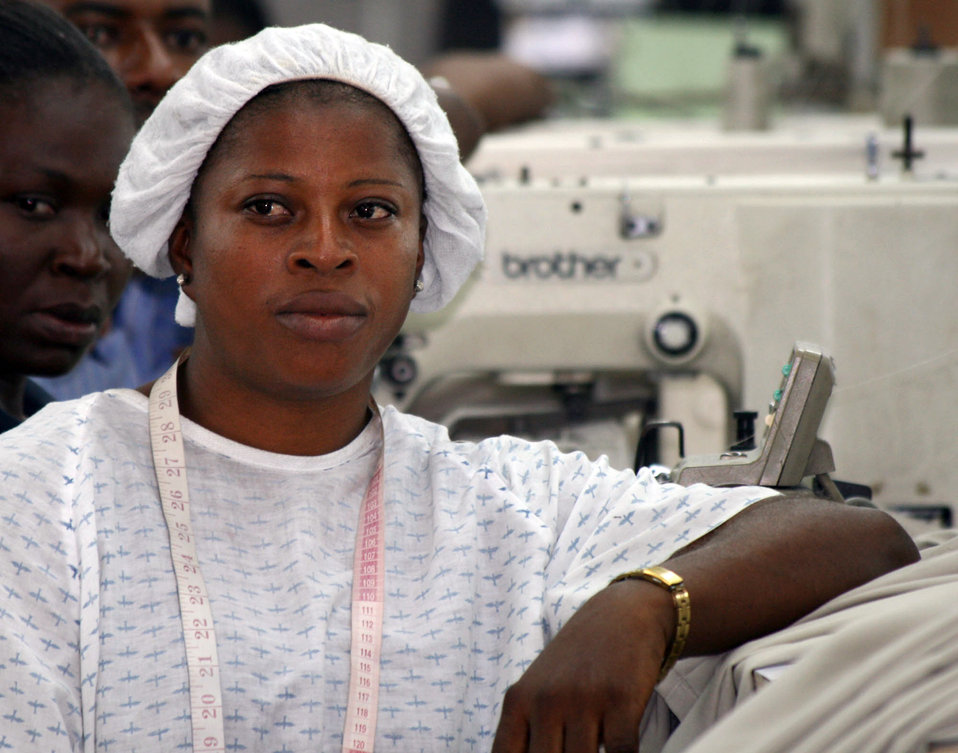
During Secretary Clinton Visit to Inter-American Woven Factory

A factory worker listens to U.S. Secretary of State Hillary Rodham Clinton speak at the Inter-American Woven factory in Port-au-Prince, Haiti April 16, 2009. The factory employs close to 500 workers. Hope II legislation has created 11,000 jobs in Haiti.